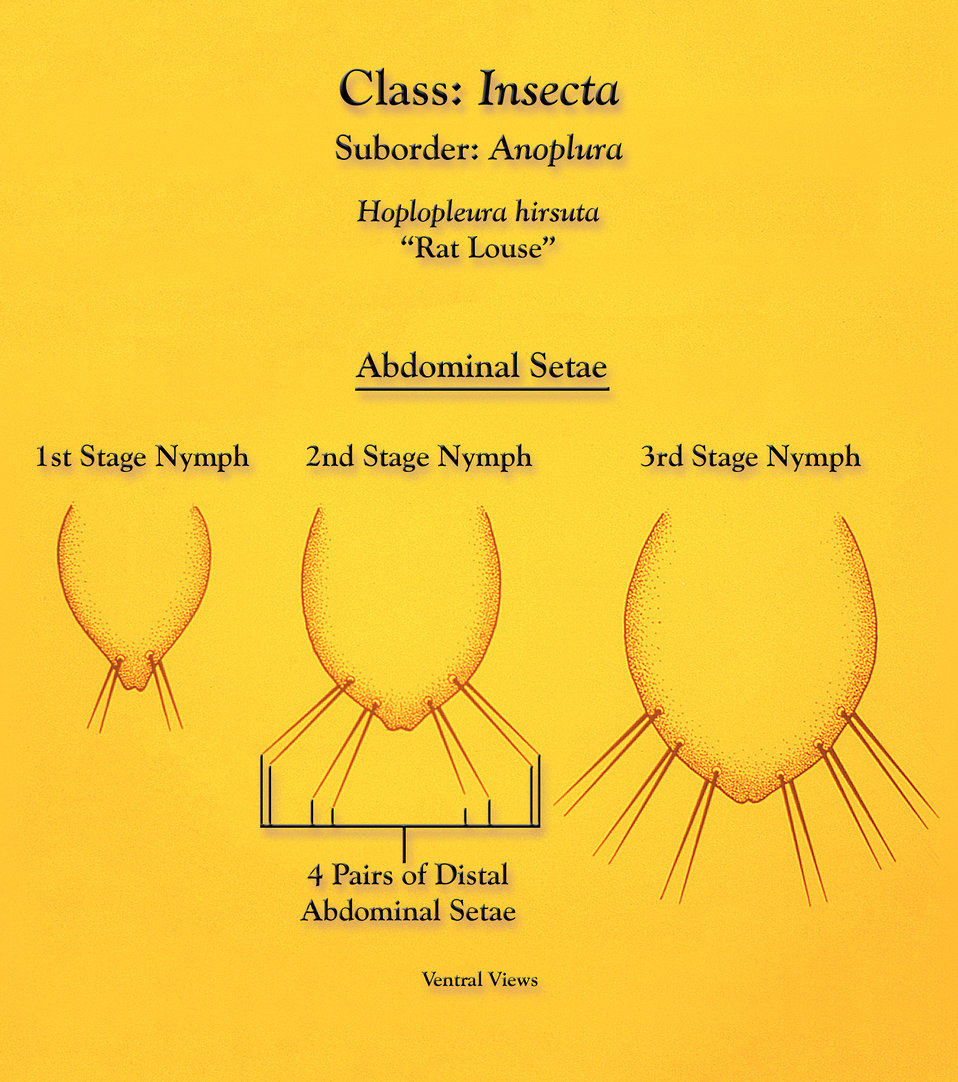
This illustration depicts the morphologic characteristics found to be displayed by the Anopleural sucking 'rat louse', Hoplopleura hirsuta during its first, second, and third nymphal stages.